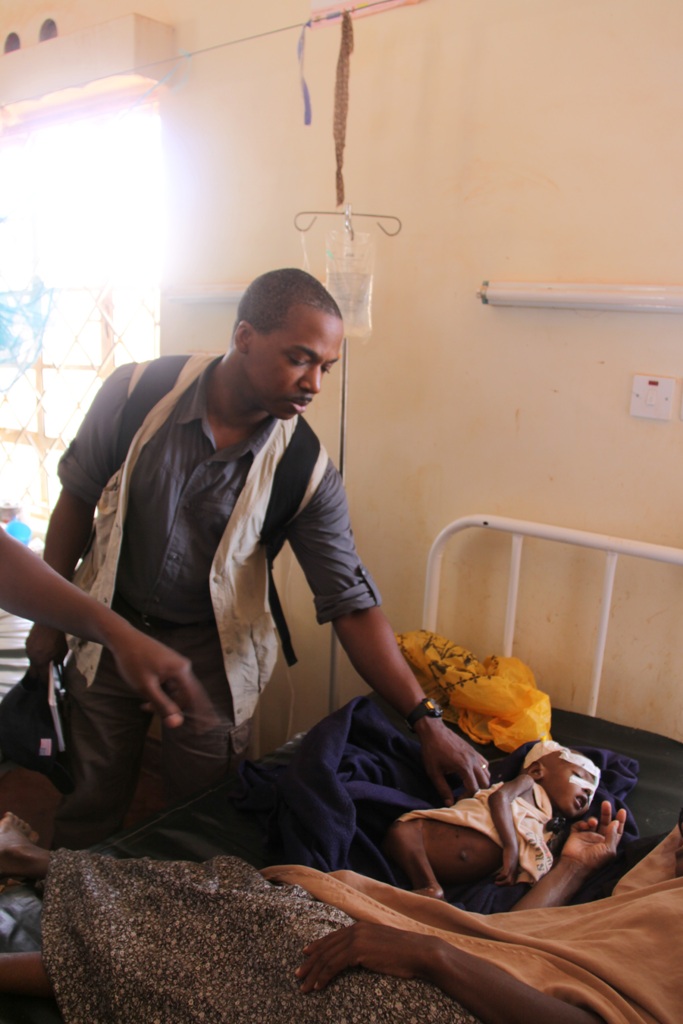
Deputy Assistant Secretary Brigety Visits a Hospital in Dadaab, Kenya

Deputy Assistant Secretary Reuben Brigety meets a mother and her severely malnourished child while in Dadaab, Kenya on July 13, 2011.